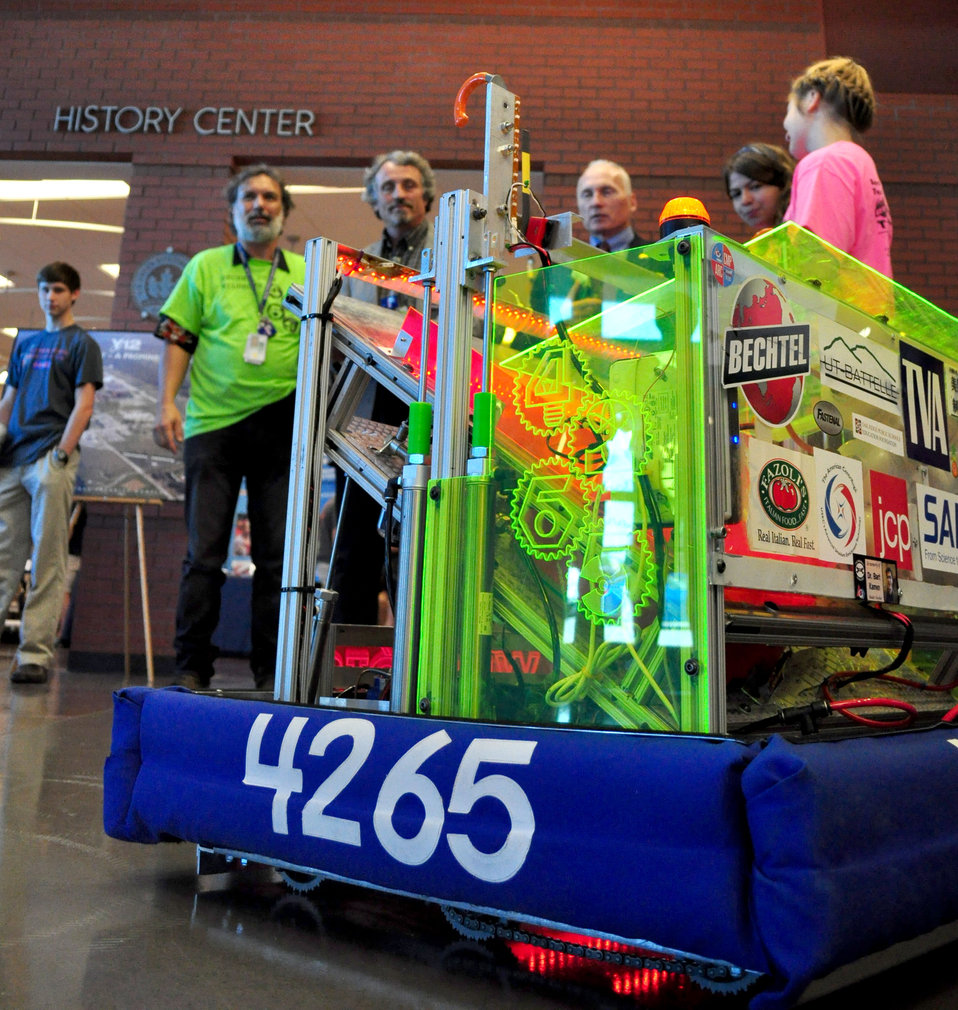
Tennessee Valley Corridor 2013 Oak Ridge

13-062 DOE photo Lynn Freeny 5-29-2013 Oak Ridge Tennessee